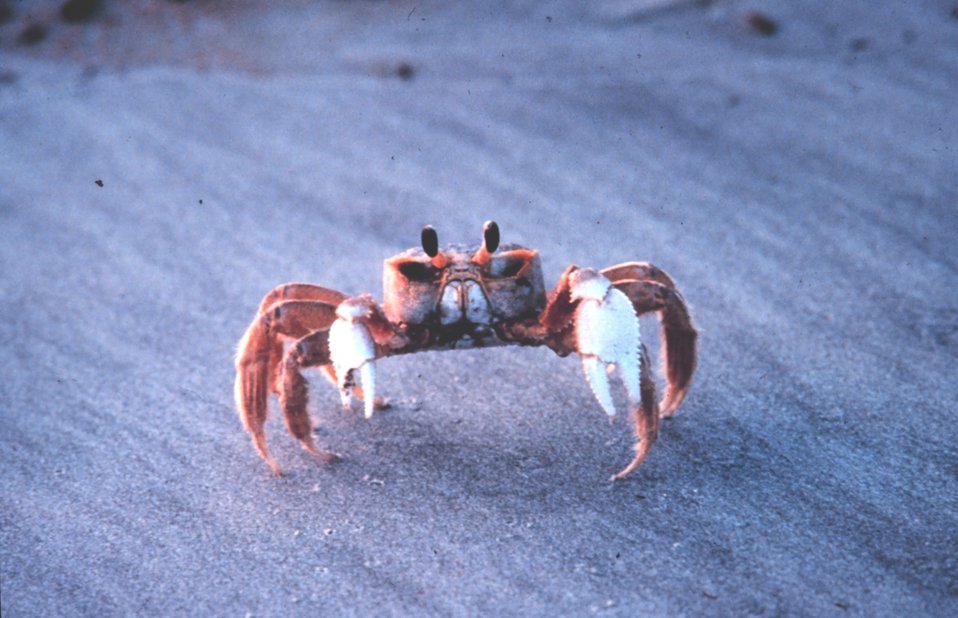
Ghost crab